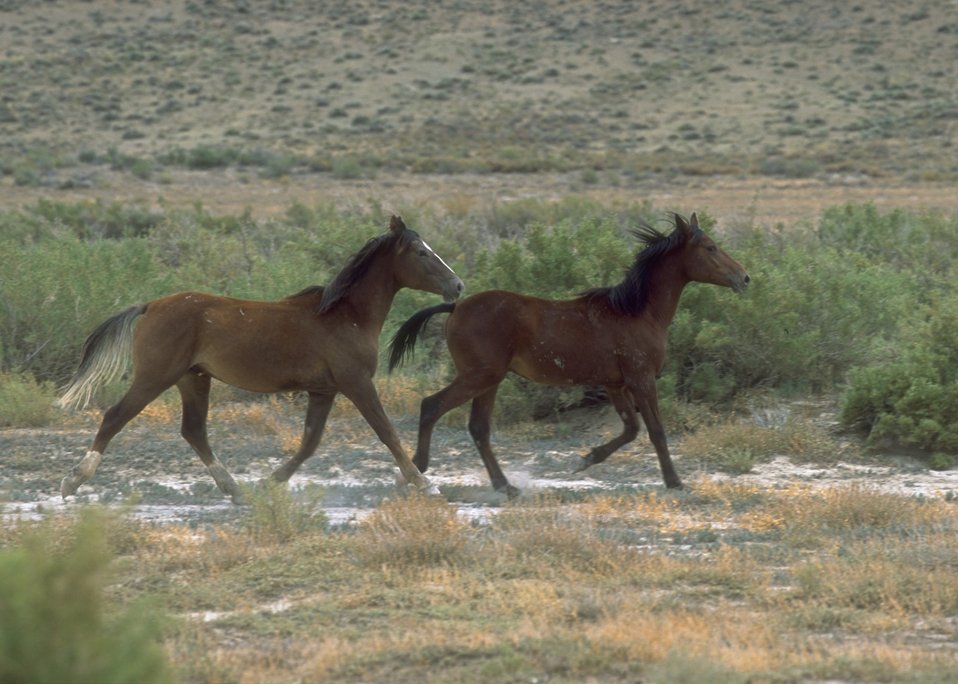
Wild horses, Rock Springs Field Office.